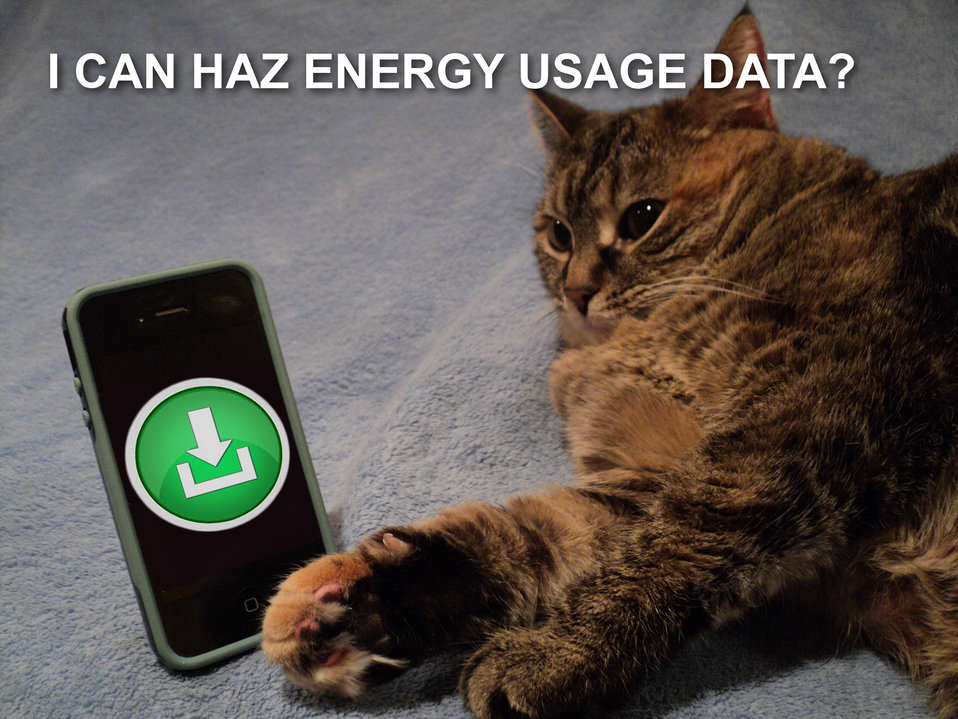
Green Button